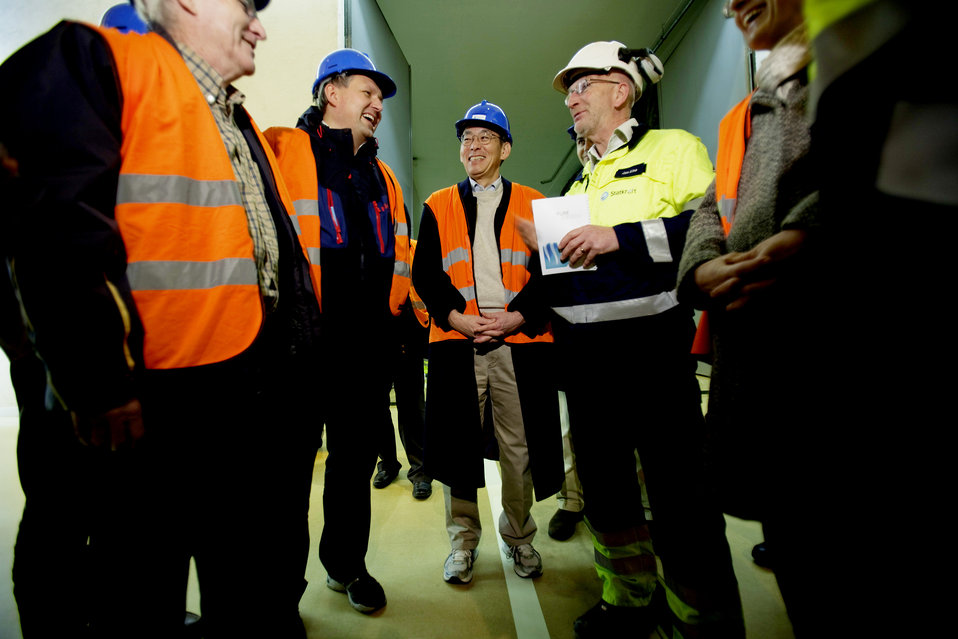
Kvilldal power station

KVILLDAL 20091212.
Olje- og energiminister, Terje Riis-Johansen og USAs energiminister Stephen Chu fikk lørdag omvisning på Ulla-Førre anlegget, Norges største kraftstasjon, av Jan Alne i Statkraft.
Foto: Stian Lysberg Solum / Scanpix